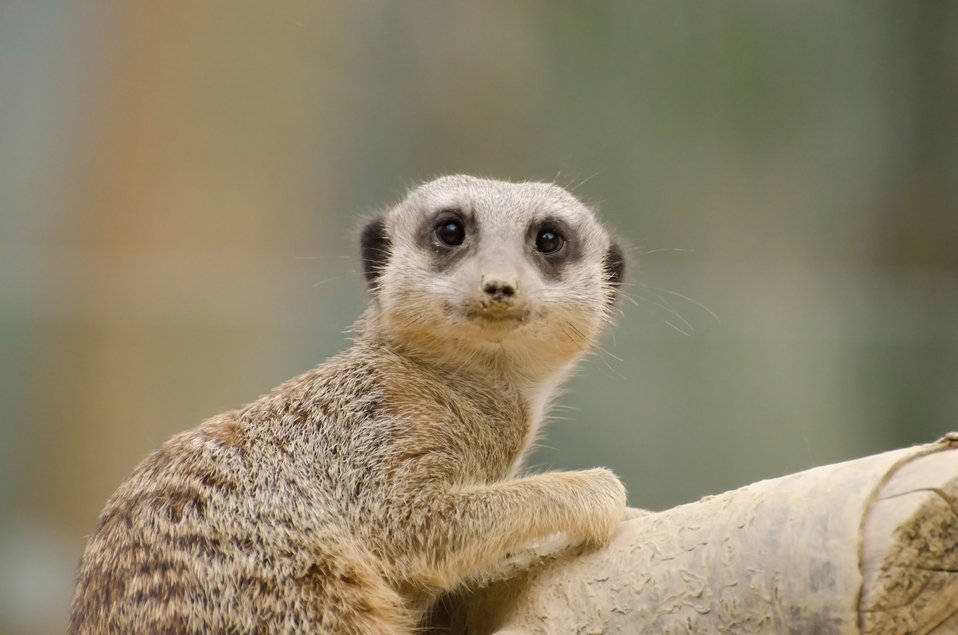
Suricate or meerkat sitting - animals.